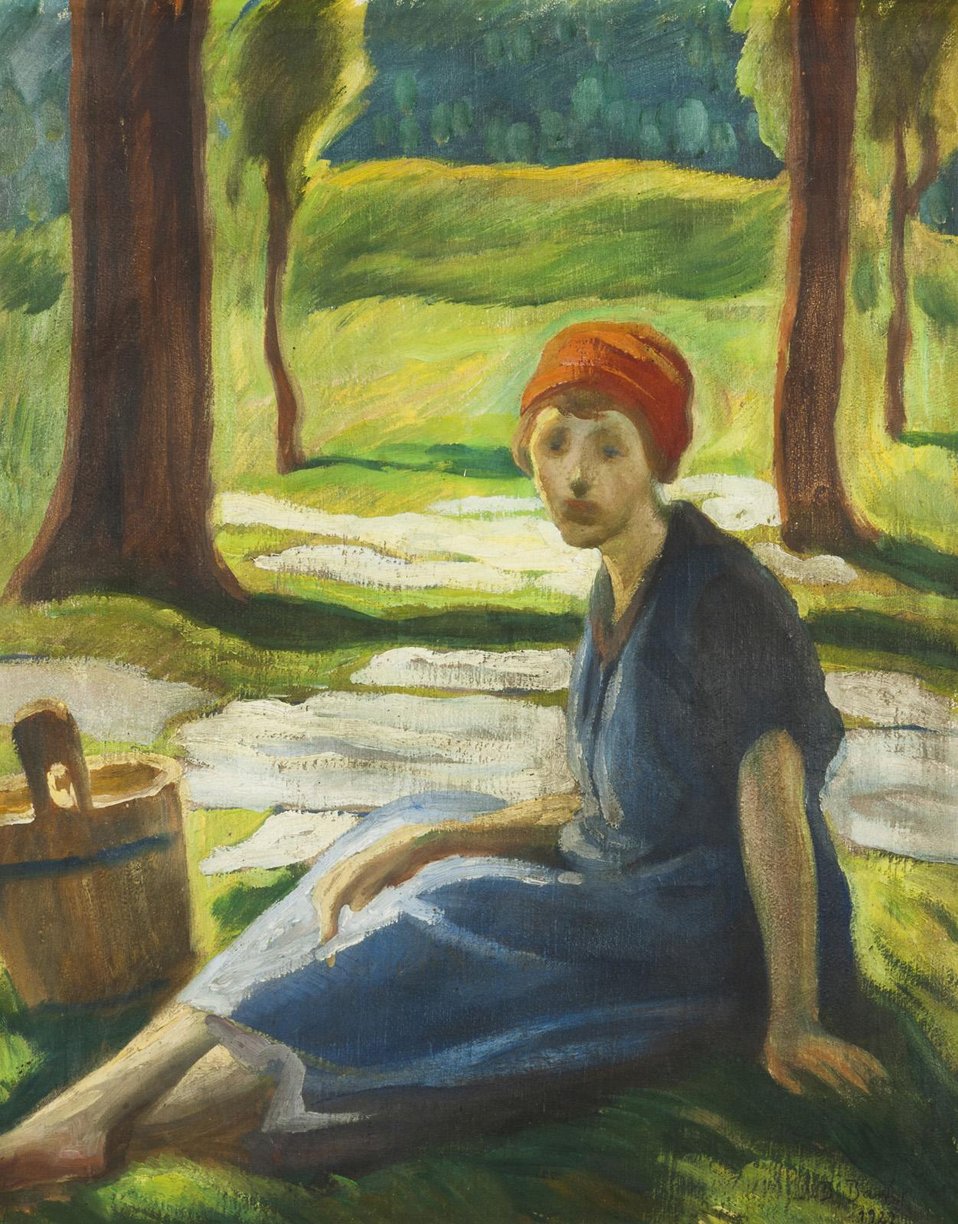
Čeština: Bílení prádla Deutsch: Wäschebleichung, rechts unten signiert und datiert: B. Bartoš 1922, Öl/Leinwand, 50 x 41 cm